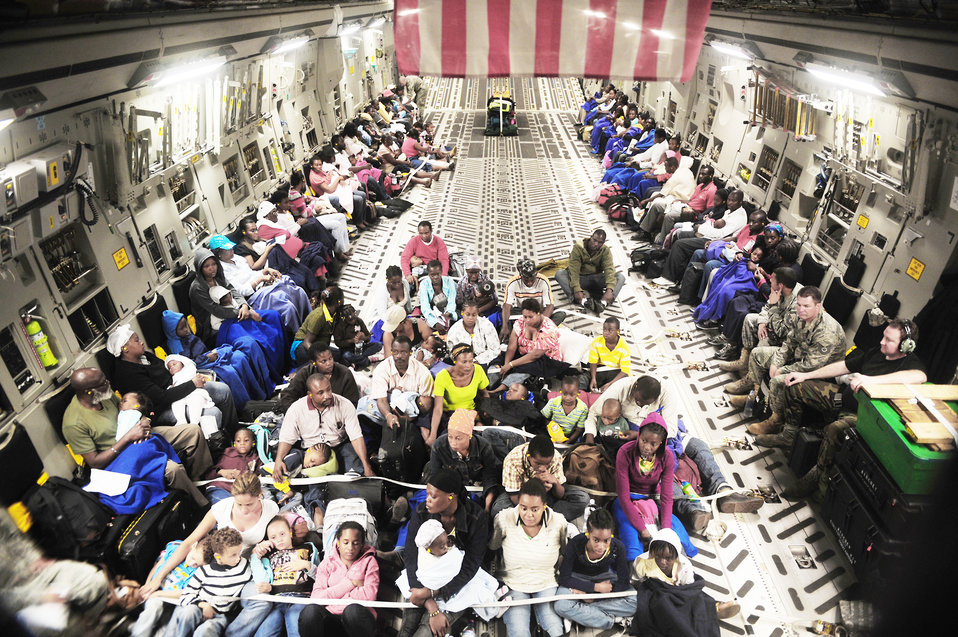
Headed home

Haitian-Americans fly back to the states on a C-17 Globemaster III Jan. 18, 2010, from Toussaint L'Ouverture International Airport in Port-au-Prince, Haiti. The C-17 crew and aircraft are from the 452nd Air Mobility Wing at March Air Reserve Base, Calif.